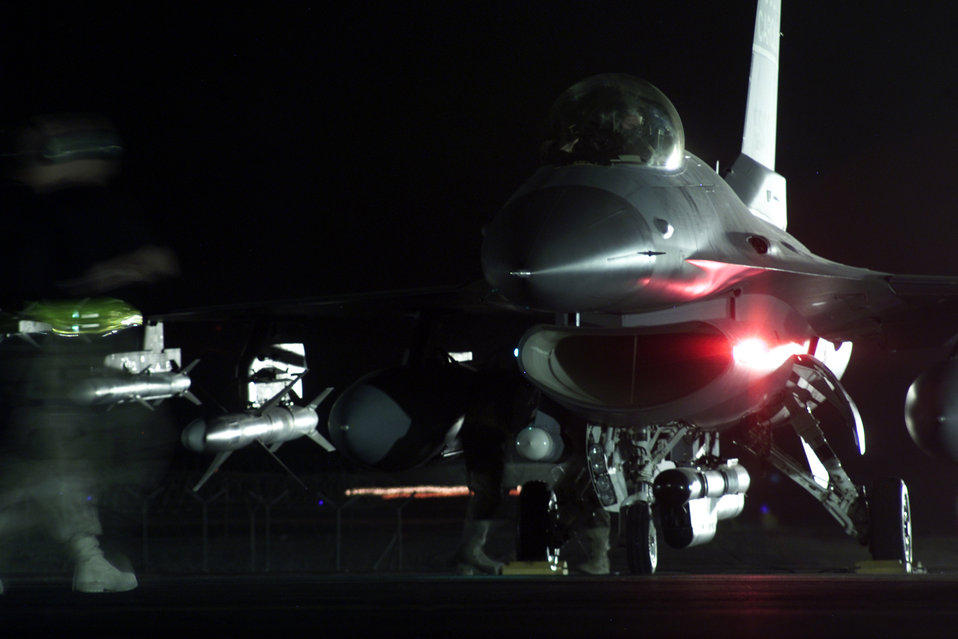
Falcon prep

OPERATION IRAQI FREEDOM -- Crew chiefs prep F-16 Fighting Falcons for Operation Iraqi Freedom night misisons at a forward-deployed air base.